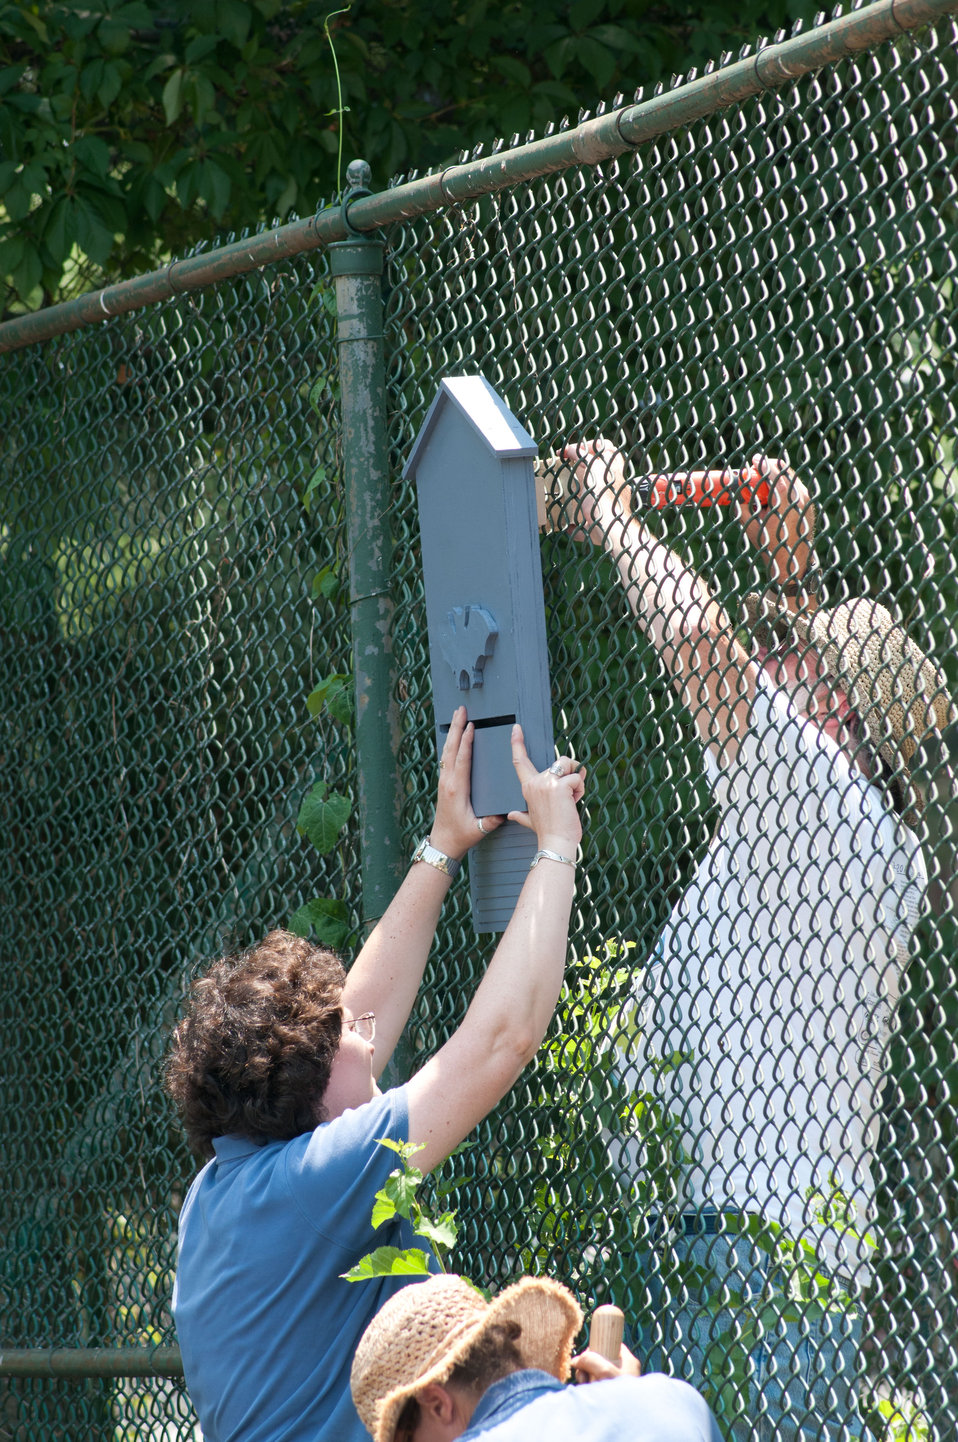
Executive Master Gardner Janet Connelly (left) and Patrick, work together to mount a bat house high on the fence, in the People’s Garden, at William B. Powell Elementary School on Thursday, June 9, 2011 in Washington, DC. Volunteers from U.S. Department of Agriculture People’s Garden Executive Master Gardener program and Washington Capitals hockey organization, along with defenseman Jeff Schultz, and mascot Slapshot transformed a grassy corner of the school playground into a habitat garden and outdoor learning area. Executive Master Gardeners led the volunteer project teams. The Washington Capitals donated new tools; tool shed; garden materials; lunch; most of the volunteers and more. The completed projects included a walking path; tiling of garden plots; planting a bird habitat garden, pollinator garden and native grasses; caterpillar and butterfly plaques; hummingbird and bat house, and tool shed. The garden will later include a picnic area, outdoor classroom, hummingbird garden, Monarch watch garden, native bee garden, and birdbath. USDA challenges its employees to establish People's Gardens at USDA facilities worldwide or on this case, help communities create gardens. People's Gardens vary in size and type, but all have a common purpose - to help the community and the environment.